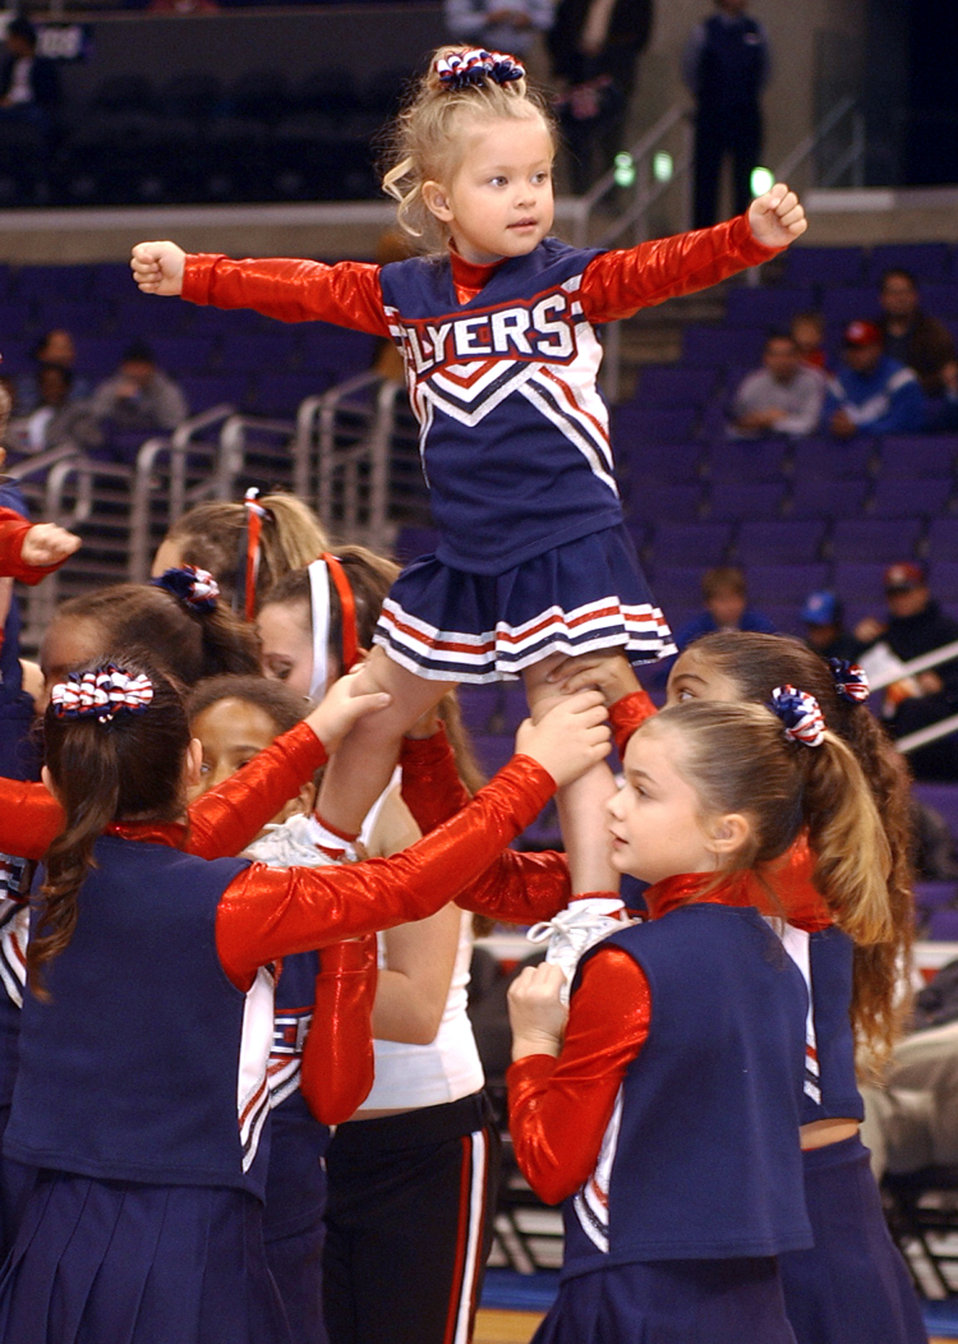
Gimme a lift

LOS ANGELES -- Three-year-old Melissa Cromwell is lifted high by fellow Vandenberg Flyers cheerleaders while performing in the pregame show here for the L.A. Clippers basketball team Nov. 15. Sixteen of the team's 43 girls participated in the show. Ranging from 3 to 14 years old, the Flyers have been together at Vandenberg Air Force Base, Calif., since spring.